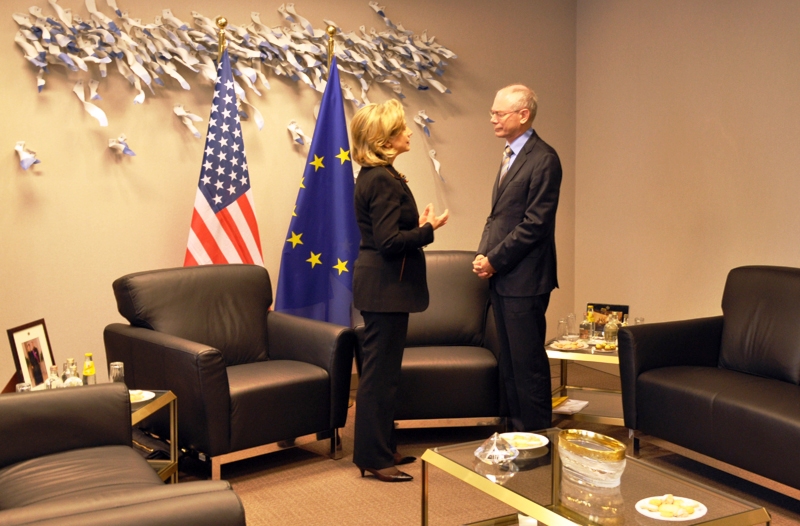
Secretary Clinton Meets With European Council President Herman Van Rompuy

U.S. Secretary of State Hillary Rodham Clinton meets with the President of the European Council Herman Van Rompuy in his office at Justus Lipsius building in Brussels, Belgium, on October 14, 2010.